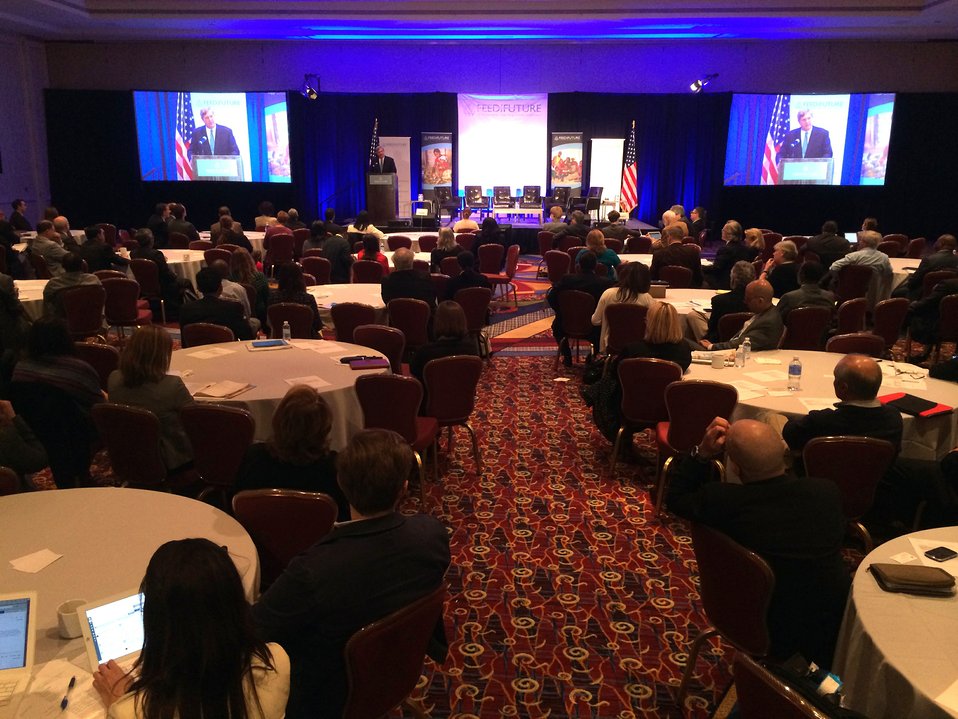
Agriculture Secretary Tom Vilsack speaks to the Feed the Future Global Forum in Washington, D.C. on Wednesday, May 21, 2014.